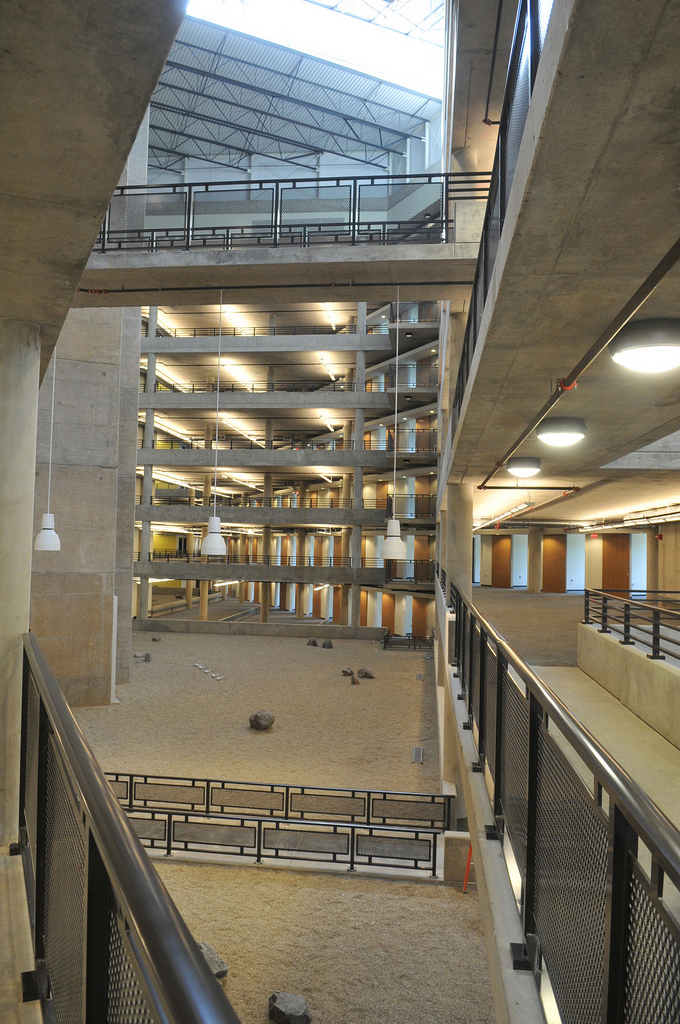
Interior view of the new Theory and Computing Sciences (TCS) Building.

The construction of the more than 200,000 square-foot, seven-story-tall Theory and Computing Sciences (TCS) building is underway near Argonne's North Gate. When completed, the building will provide a much-needed infrastructure for large-scale computers, computational laboratories, a digital conference and meeting area as well as a consolidation Argonne library.